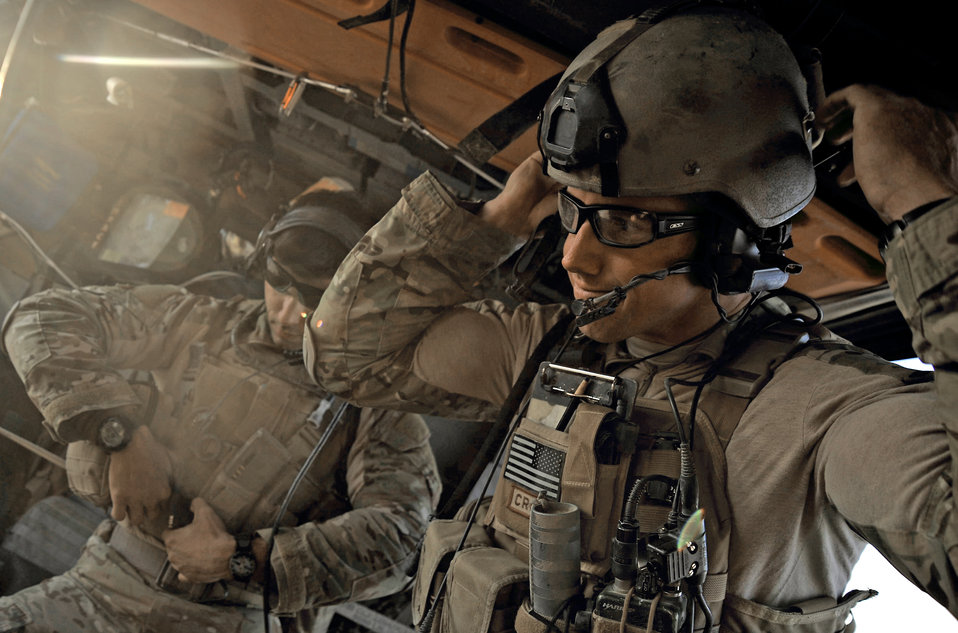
Squadron highlights capabilities during Afghan rescue mission

A combat rescue officer prepares his gear Dec. 7, 2009 at Camp Bastion, Afghanistan. The members of the 66th Expeditionary Rescue Squadron can respond to a medical evacuation in less than seven minutes to pick up patients. The combat rescue officer is from the 66th Expeditionary Rescue Squadron.